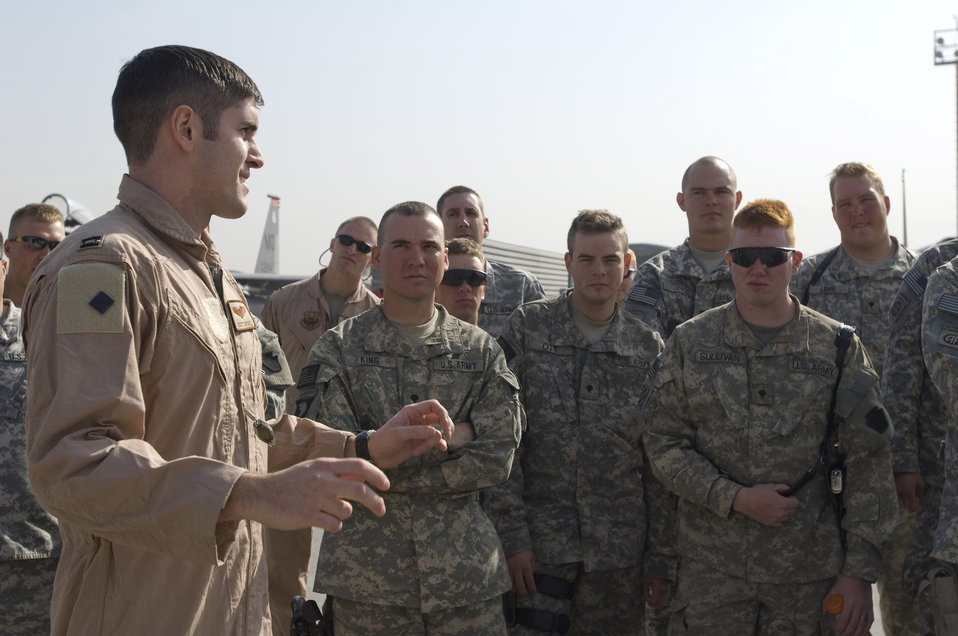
Air support unites Airmen, Soldiers in Afghanistan

Capt. Scott Crowell gives an aircraft tour to Pennsylvania Army National Guard Soldiers during a Oct. 28 visit to Bagram Airfield, Afghanistan. Members from the 391st Expeditionary Fighter Squadron and the 75th Expeditionary Fighter Squadron hosted the Soldiers who wanted to thank the pilots who protect ground forces with close-air support while engaged in firefights with enemy forces. Captain Crowell is an F-15E Strike Eagle pilot.